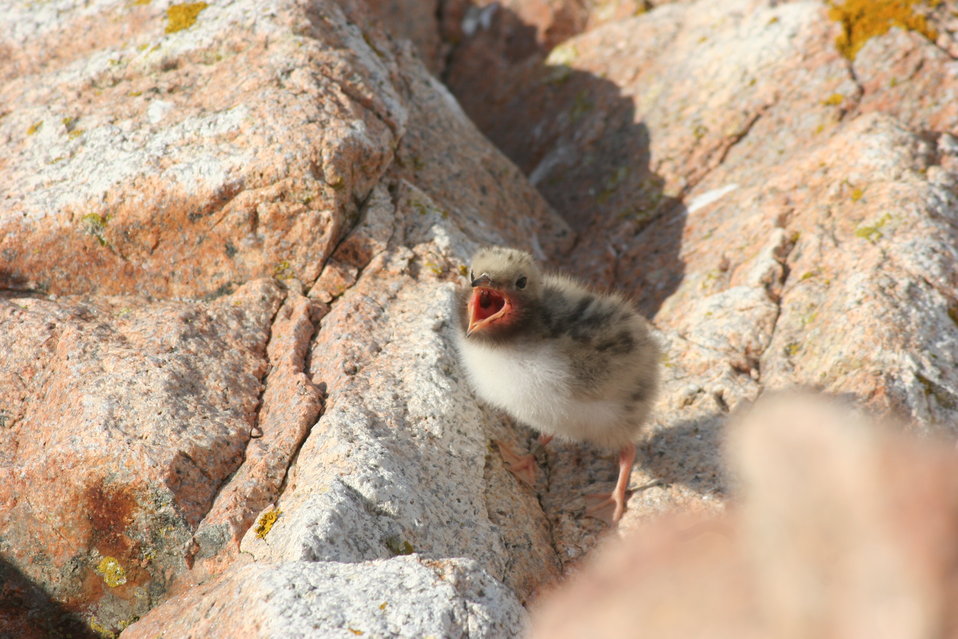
Tern Chick